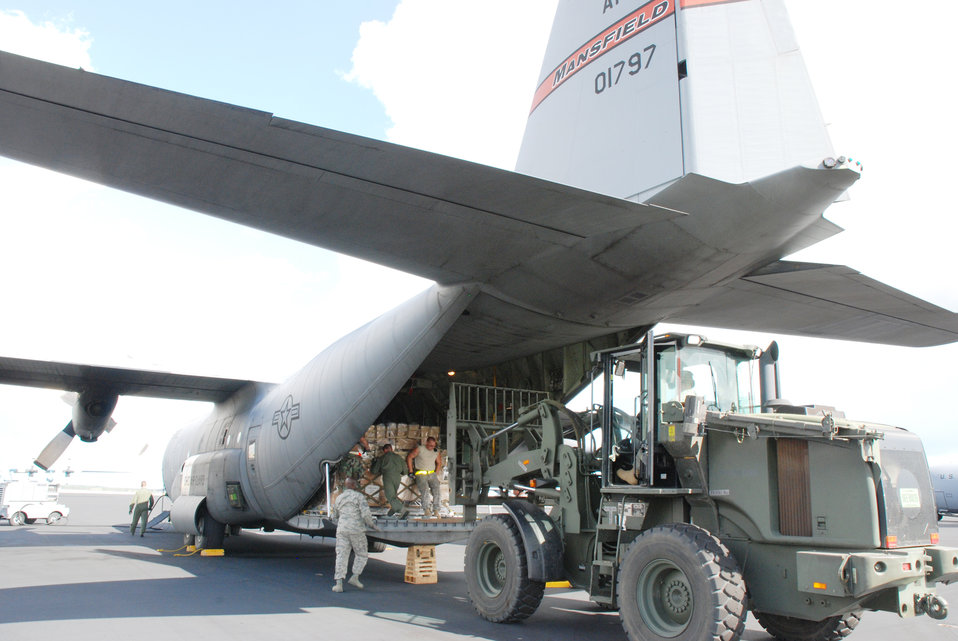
Coronet Oak aircrews respond to Haiti earthquake

Guardsmen, reservists and active-duty Airmen load cargo on a C-130 Hercules Jan. 22, 2010, at Homestead Air Reserve Base, Fla. The C-130 is assigned to the 35th Expeditionary Airlift Squadron. The cargo, consisting of bottled water, medical supplies and other needed items, was loaded for delivery to military forces in the Dominican Republic assisting with the earthquake relief in Haiti.